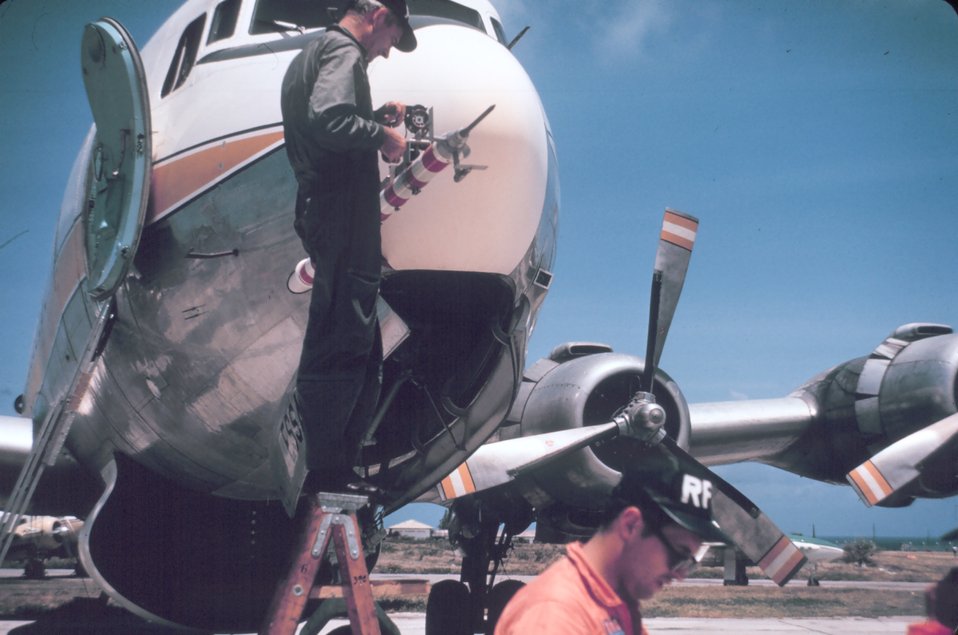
39C - Gust probe.